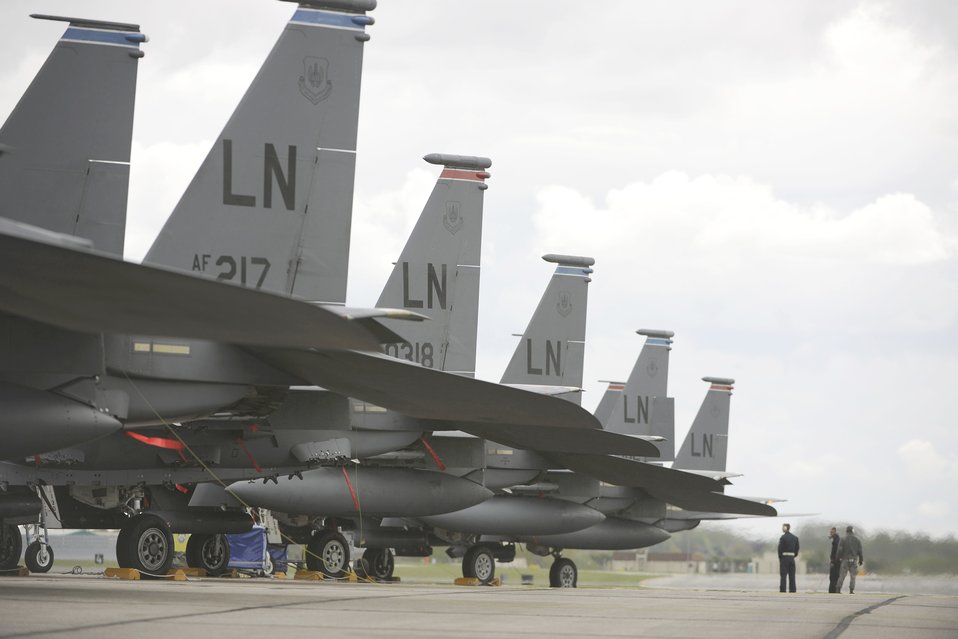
Line 'em up

F-15 Eagle crew chiefs from the 48th Aircraft Maintenance Squadron wait as a pair of F-15s warm up before takeoff, May 11, 2010, at Royal Air Force Lakenheath, England. The crew chiefs and the aircraft will be operating out of RAF Mildenhall, England, for the next month allowing Lakenheath's runway to be repaired.